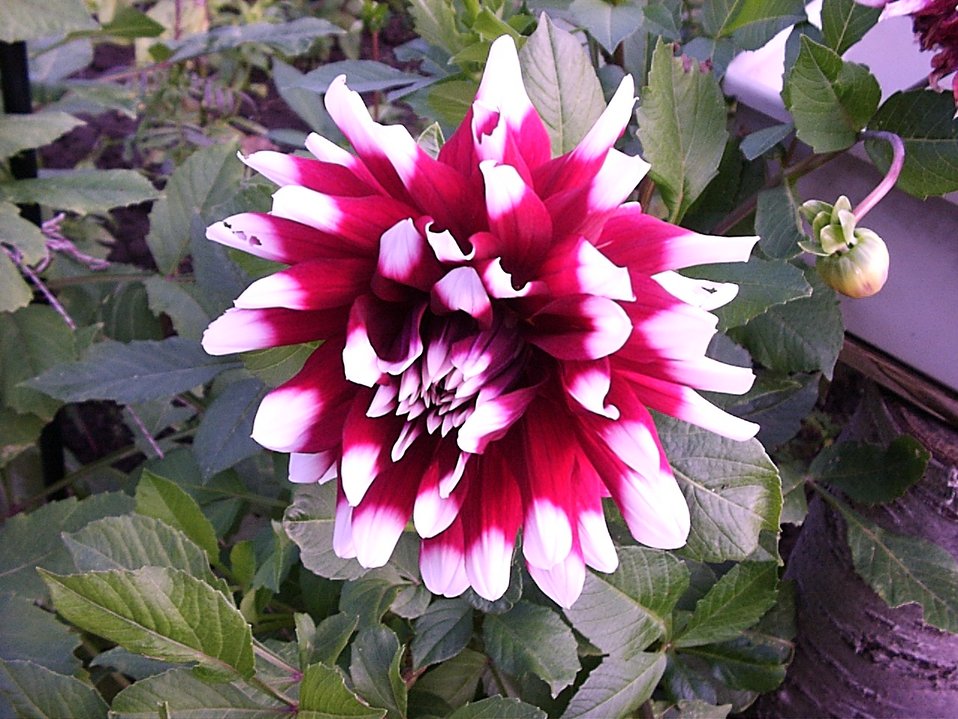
Dahlia 'Hit Parade'. Photo made by de:Benutzer:Sebastian Wallroth in the garden of my grandfather in de:Mühlhausen (Thüringen), Germany on September 30, 2004.